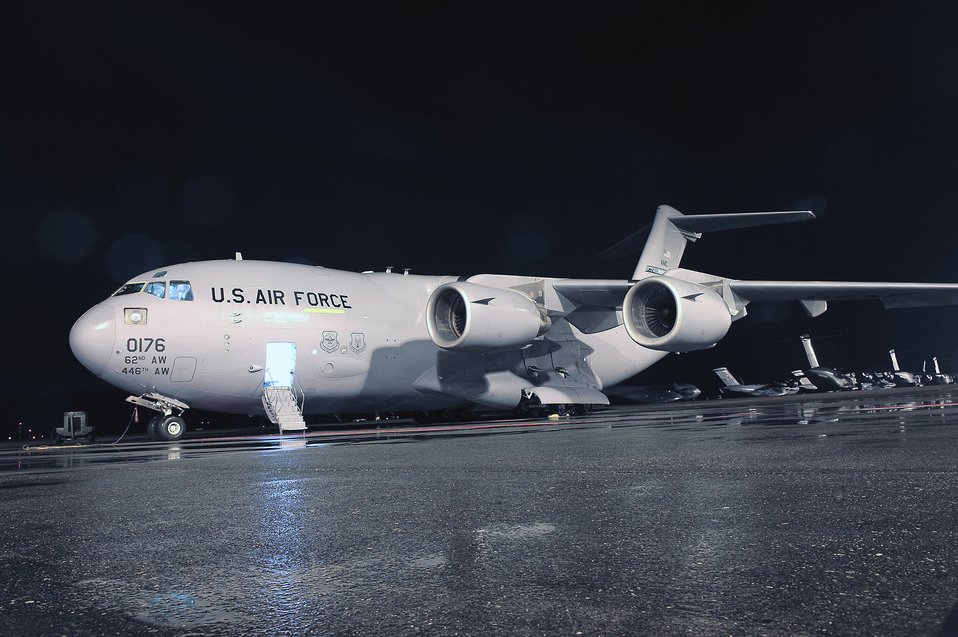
June 10 airpower summary: C-17s support SWA operations

A C-17 Globemaster IIIs, similiar to this one, provide cargo and troop support and intra-theater heavy airlift, helping sustain operations throughout Southwest Asia.